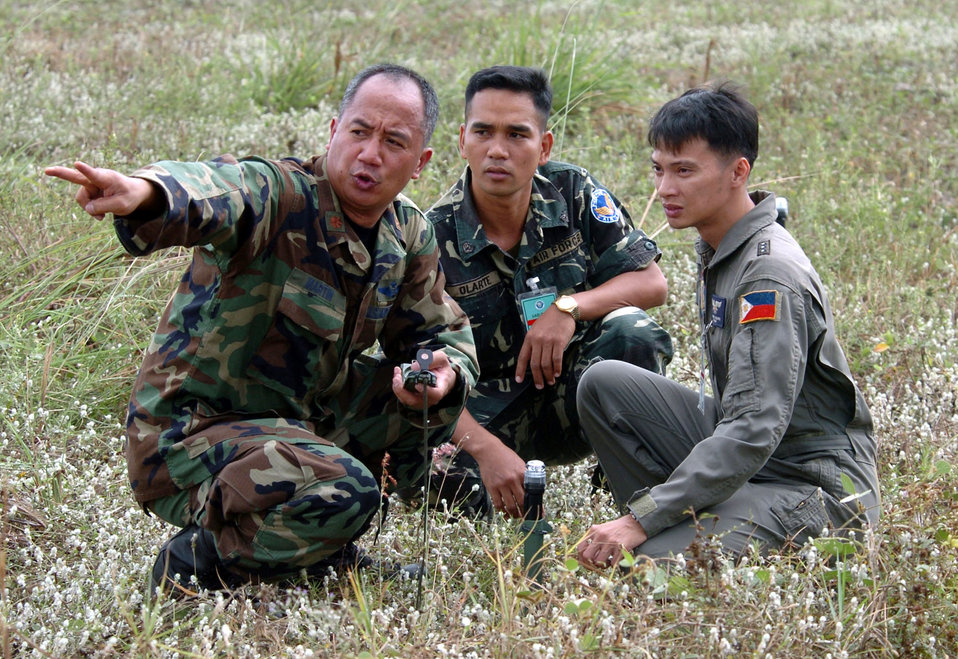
Balikatan 2004

BASA AIR BASE, Philippines -- Maj. Manny Martin (left) uses a compass to explain proper cargo airdrop procedures to Philippine air force Capt. Erich Nazario (right) and Sgt. Victorio Olarte at a drop zone here Feb. 25 during exercise Balikatan 2004. Major Martin is an air mobility liaison officer from the 25th Air Support Operations Squadron at Hickam Air Force Base, Hawaii. Balikatan is an annual bilateral exercise that demonstrates U.S. resolve and commitment to train, advise and assist the Philippine government.